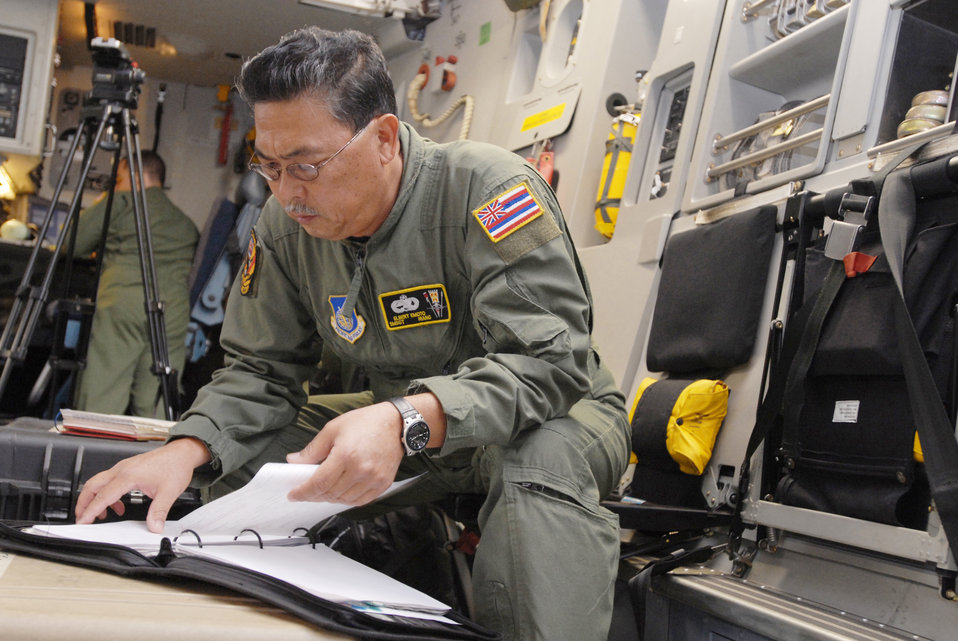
PACAF aircraft depart to assist Haiti relief effort

Senior Master Sgt. Elbert Emoto, a member of the Hawaii Air National Guard, reviews C-17 Globemaster III maintenance records before a flight Jan. 19, 2010, at Hickam Air Force Base, Hawaii. The C-17 and crew are flying to Charelston AFB, S.C. to take part in ongoing humanitarian airlift operations to Haiti.